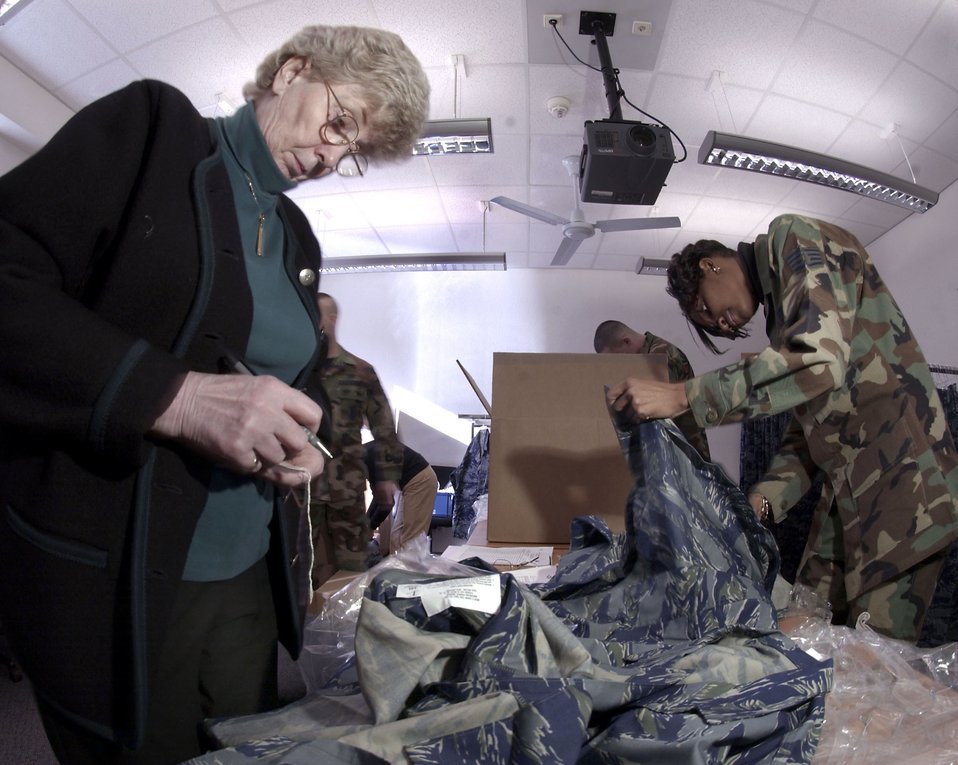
This is a test

RAMSTEIN AIR BASE, Germany -- Marianne Maier (left) and Staff Sgt. Candace Moore catalog and stock uniforms here for the wear-test of a possible replacement for the current battle dress uniform. Testing usually lasts six months to one year but can be extended based upon feedback from testers. Mrs. Maier is from the base's Army and Air Force Exchange Service's military clothing store and Sergeant Moore is from the 435th Medical Group.